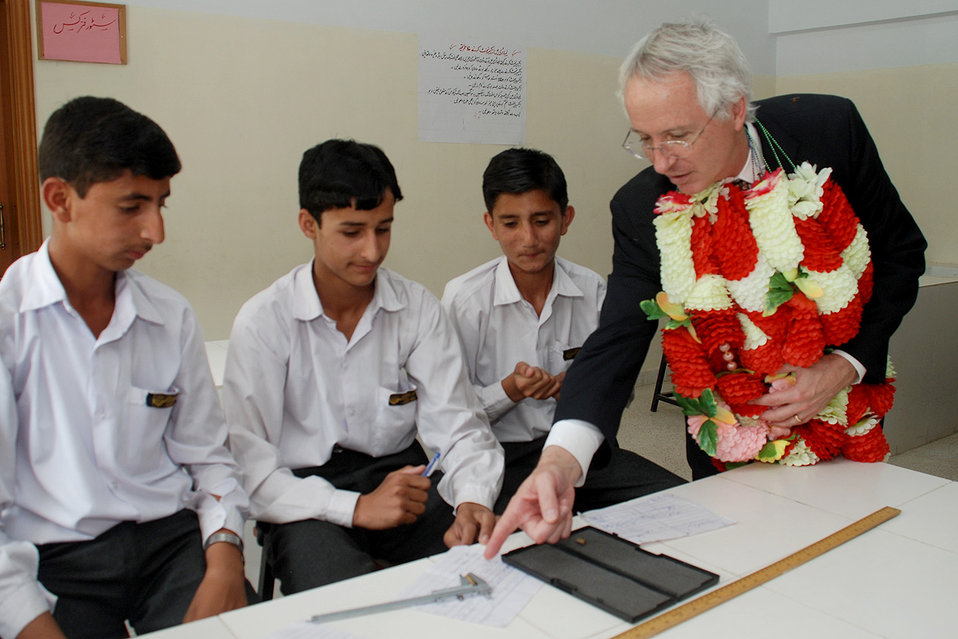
Envoy Highlights U.S. Development

In addition to the major structural considerations in design, the buildings have been designed to protect life. Each structure is designed to have multiple readily accessible exits as required by the Uniform Building Code. This requirement comes from considerable evidence that multiple easily accessible exists enable people to escape from buildings in time to save their lives,” said Tarek Selim, Chief of Party for the USAID construction program responsible for building these schools.